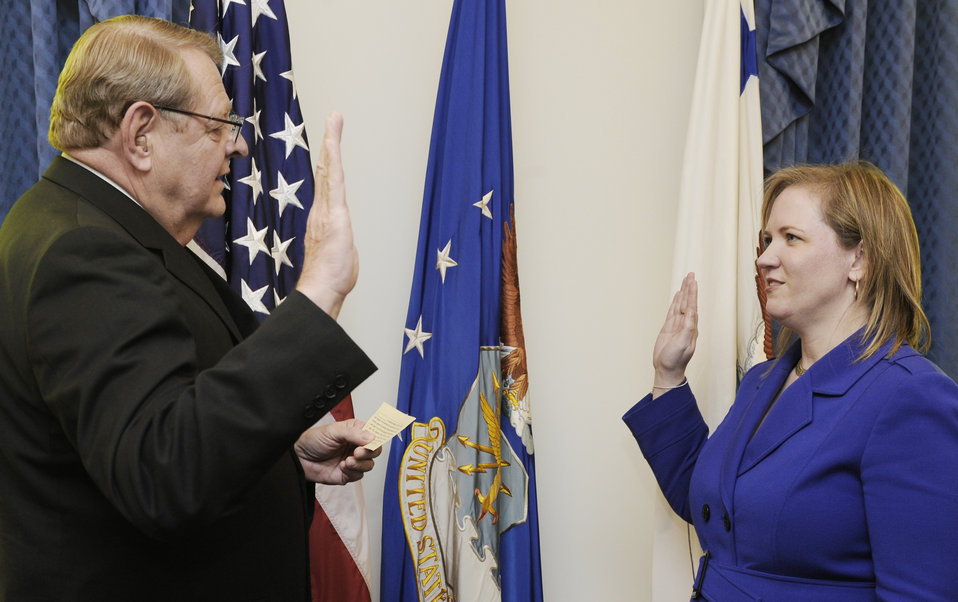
William Davidson

Erin C. Conaton takes her oath of office March 15, 2010, as the new undersecretary of the Air Force during a ceremony in the Pentagon officiated by William Davidson, the administrative assistant to the secretary of the Air Force.